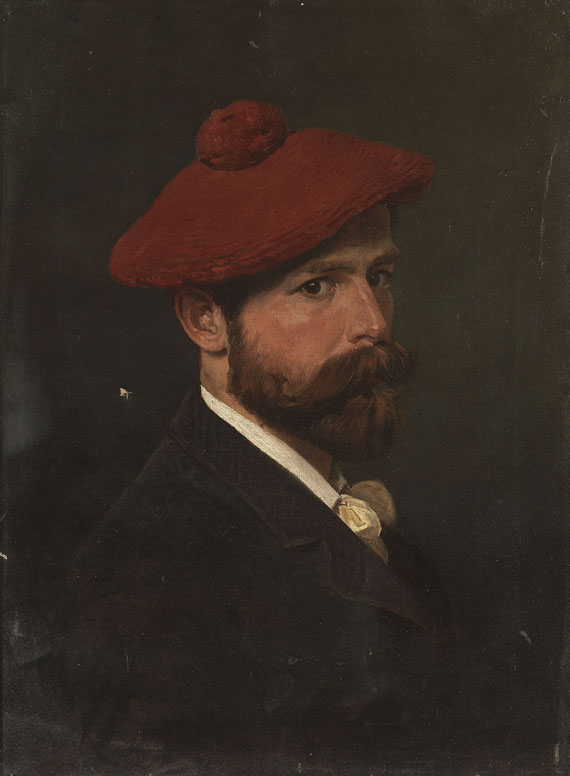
Alexander Bogdanowitsch Willewalde Selbstportrait 1888